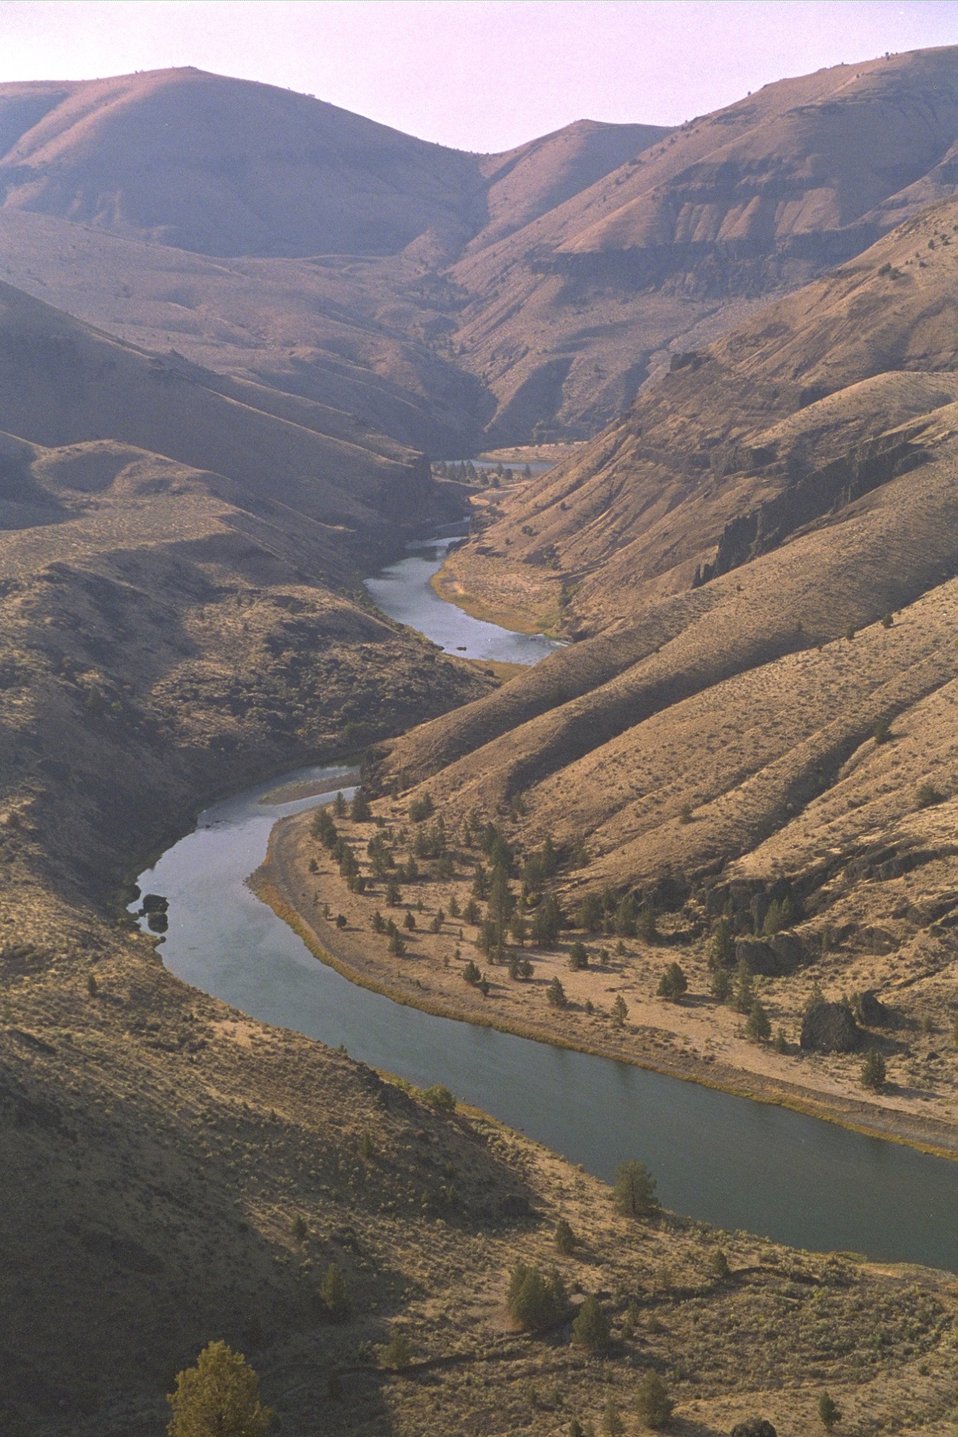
Long shot looking up the John Day River from viewpoint up in the hills.